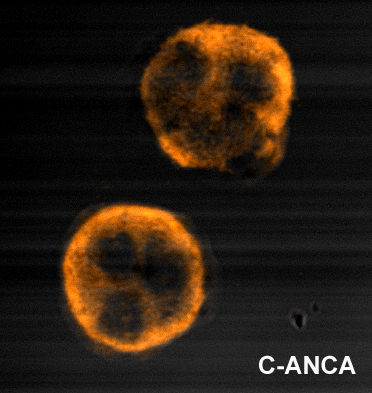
Immunofluorescence pattern produced by binding of ANCA from a patient with Wegener's Granulomatosis to ethanol-fixed neutrophils